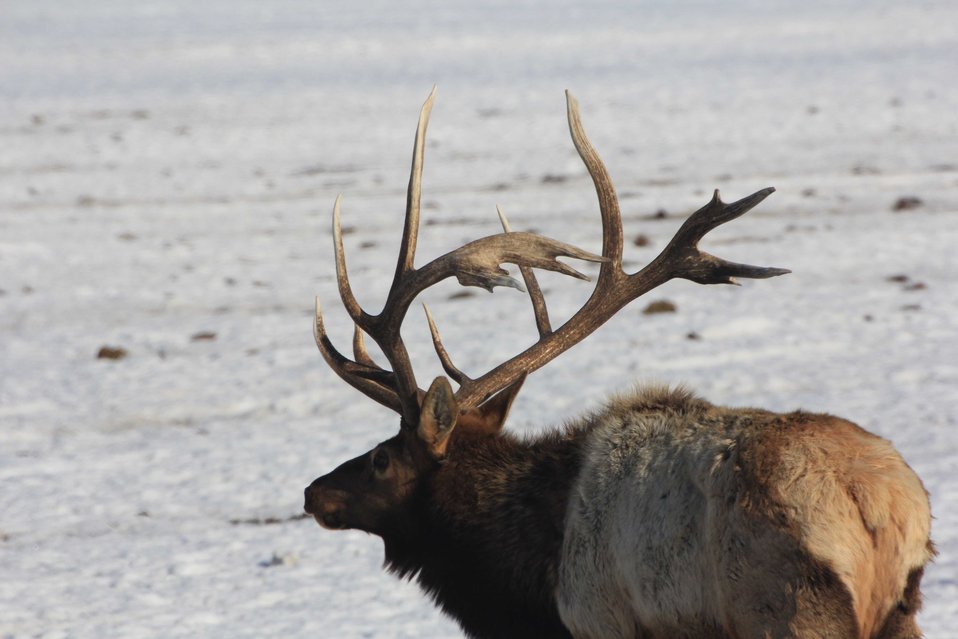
Palmate branching

The antlers on this bull elk have unique palmate branching with an unusual number of terminal tips.

Credit: USFWS / Tony Hough, National Elk Refuge volunteer